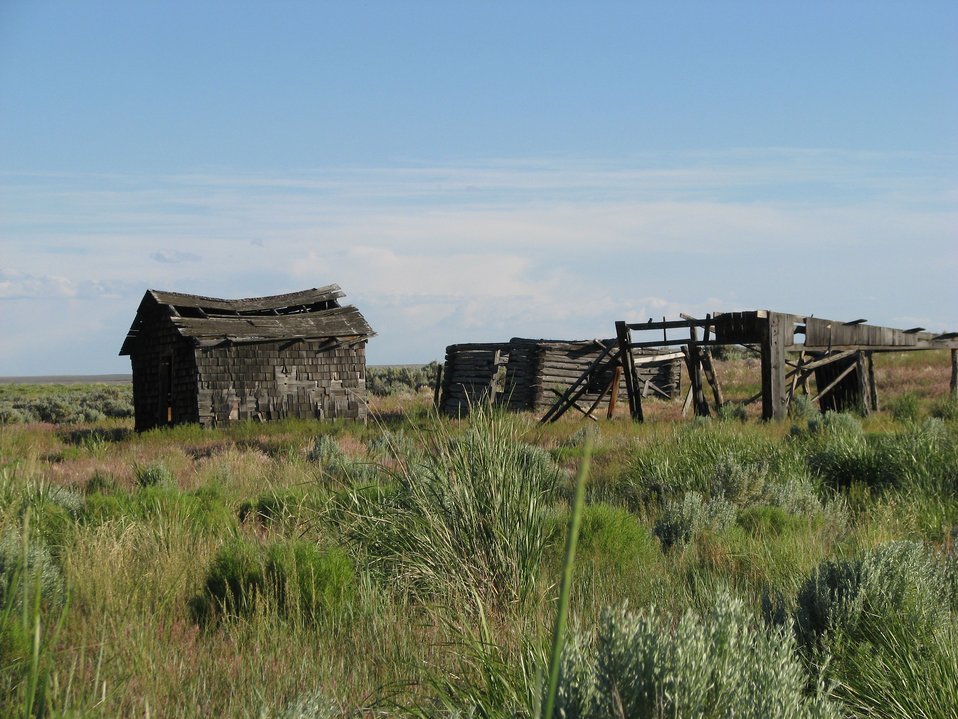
Anna Flook Homestead 3

Located on what is now Hart Mountain National Antelope Refuge, Oregon